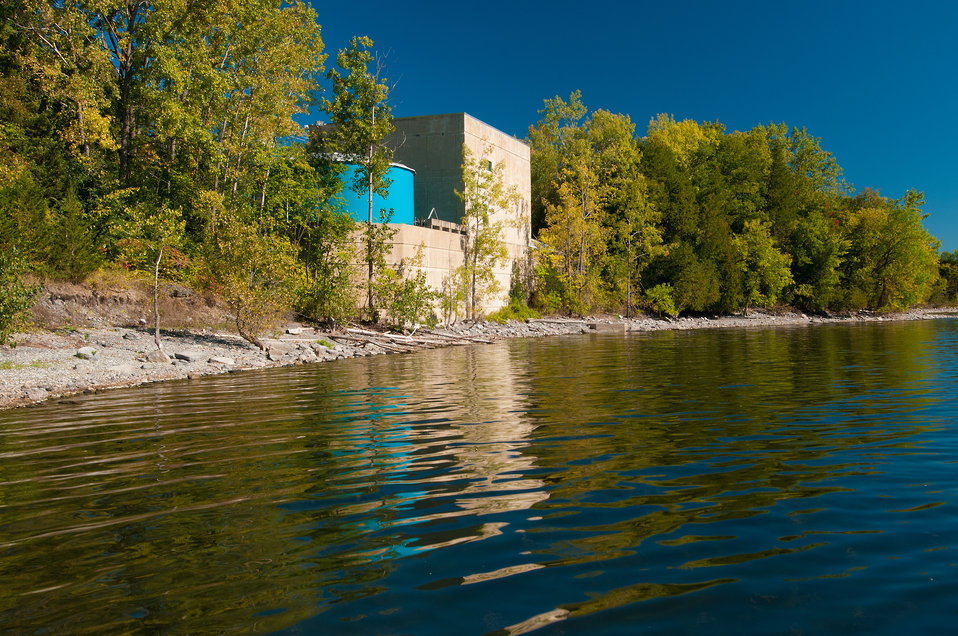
The Vergennes-Panton Water District along Lake Champlain in Vergennes, VT was able to upgrade the city's water treatment plant through a Water and Environmental Programs (WEP) loan from the U.S. Department of Agriculture (USDA) Rural Development (RD) on Sep. 18, 2013.